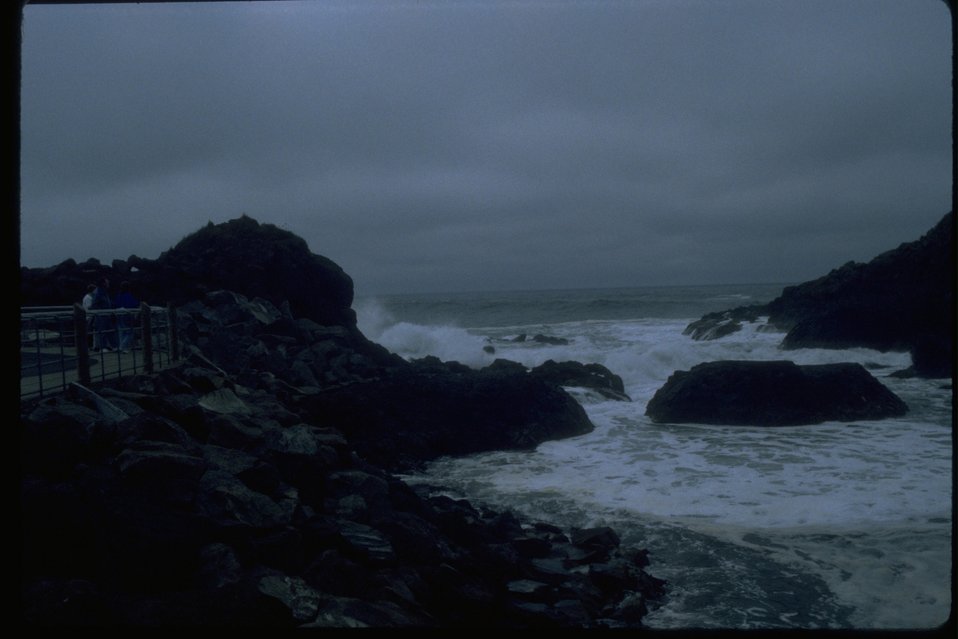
Storm waves at Quarry Cove in the Yaquina Head ONA.